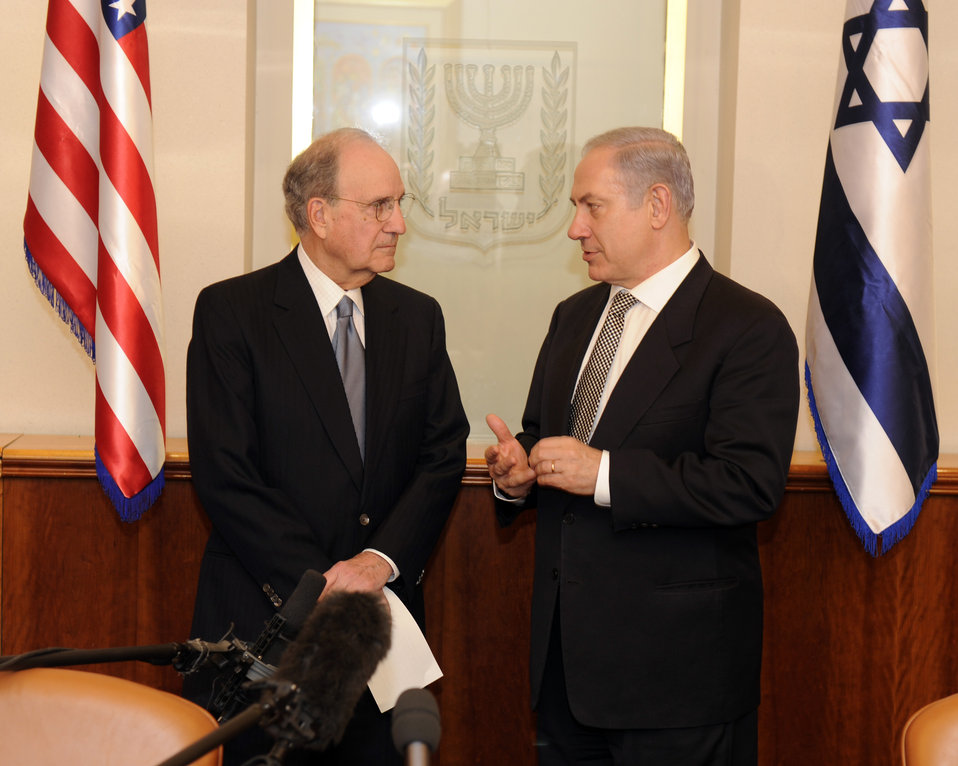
Special Envoy Mitchell Meets With Israeil Prime Minister Netanyahu

U.S. Special Envoy for Middle East Peace George J. Mitchell meets with Israeli Prime Minister Benjamin Netanyahu at the Prime Minister's office in Jerusalem on December 13, 2010.